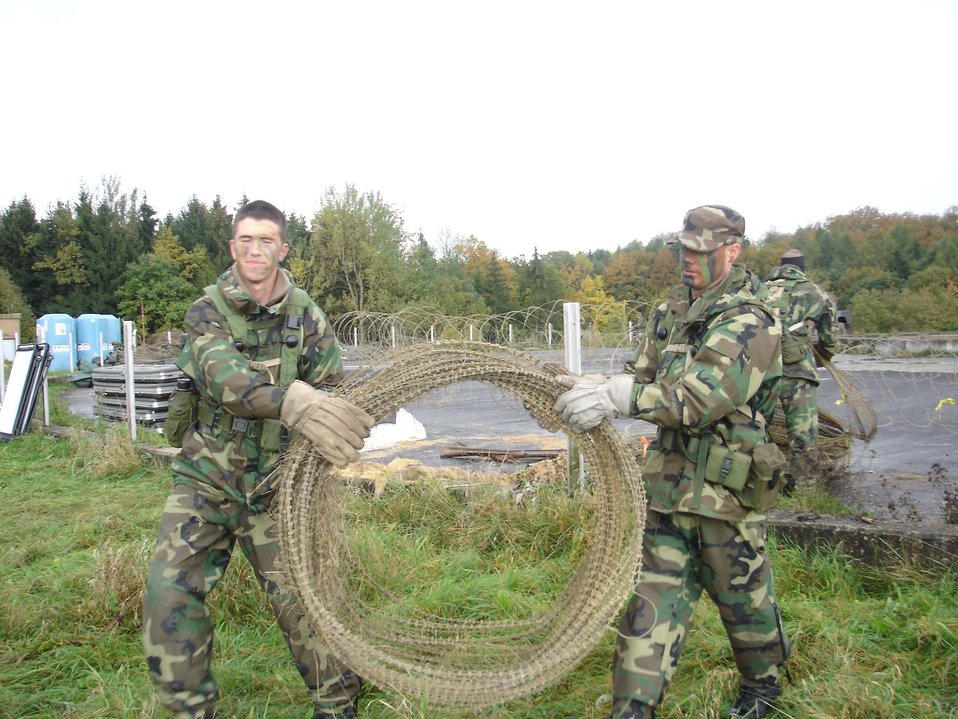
Combat Comm readies Airmen for deployments

Airman Stephen Howard (left) and Senior Airman Eric Villafana secure their camp with constantine wire during the combat readiness course on Bitburg Air Base, Germany, Oct. 23. Both AIrmen are from the 1st Combat Communications Squadron.